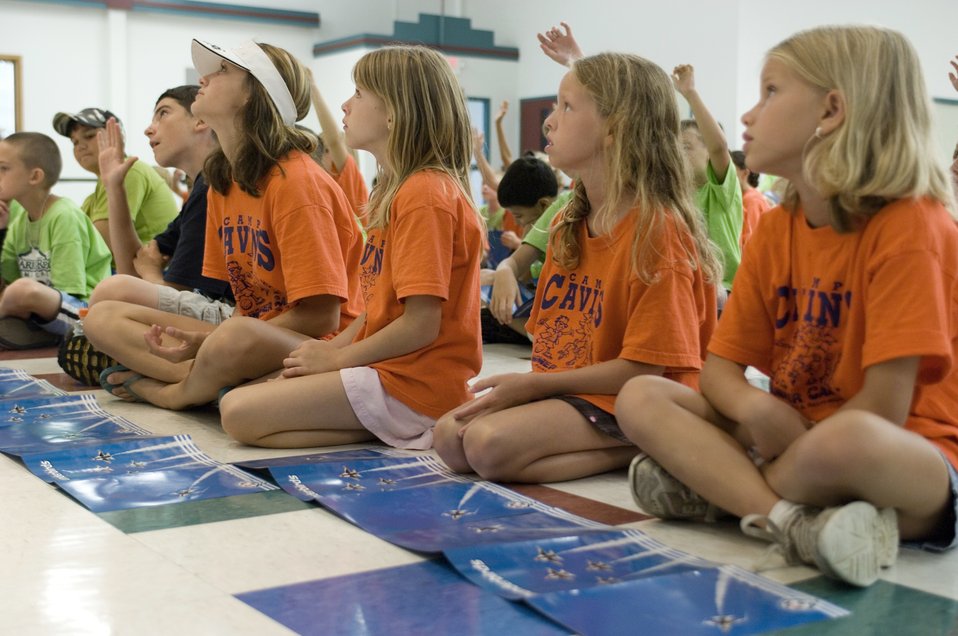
Thunderbirds visit youth camp

Children attending the Caty Cavins Community Center Summer Camp in O'Fallon, Ill., on Aug. 11 listen as Maj. Brian Farrar of the Thunderbirds, the U.S. Air Force Air Demonstration Squadron, tells what it is like to be a fighter pilot. Major Farrar is Thunderbird No. 5 and lead solo for this year's team. The camp visit was part of Air Force Week community activities in the St. Louis area.